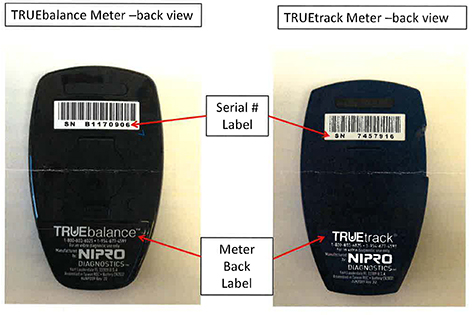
RECALLED – Blood Glucose Meters

January 2, 2014 – Product Recall – Nipro Diagnostics, Inc. Initiates Voluntary Recall of Certain TRUEbalance and TRUEtrack Blood Glucose Meters.